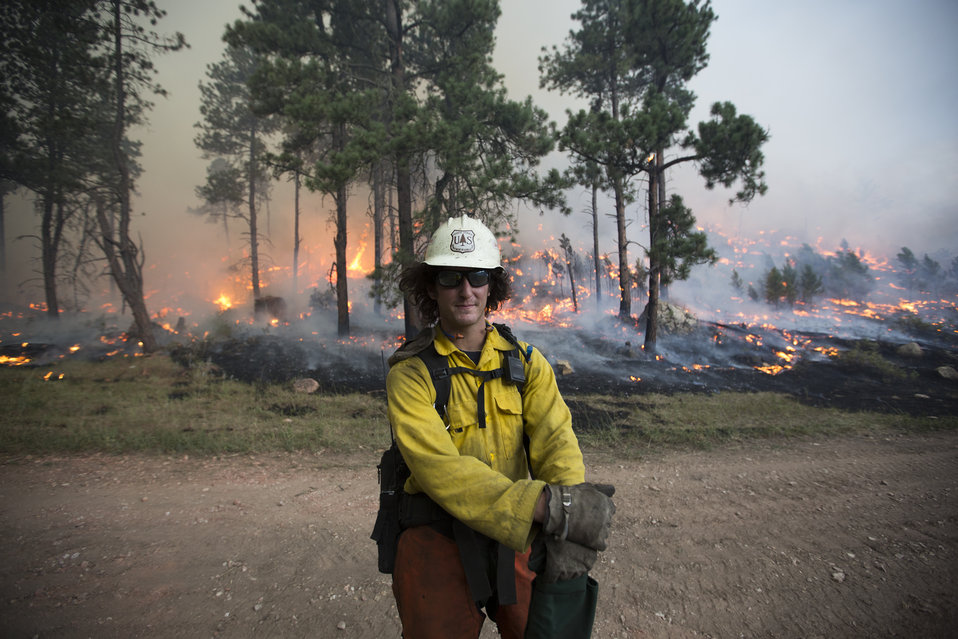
Sacramento Interagency Hotshot firefighter Dan Locicero from the Lincoln National Forest in New Mexico fights the Myrtle Fire in Custer, SD on July 22, 2012. The Sacramento Interagency Hotshot Crew (IHC) are a group of multi-skilled professional wild land firefighters specifically trained, organized, and equipped for rapid response to wildfire situations. The Sacramento IHC specialty is wildfire suppression, but is sometimes assigned other jobs, including search and rescue and disaster response assistance. When not busy fighting fires the Sacramento IHC work to meet resource goals on their home forest lands through thinning, prescribed fire implementation, habitat improvement or trail construction projects.